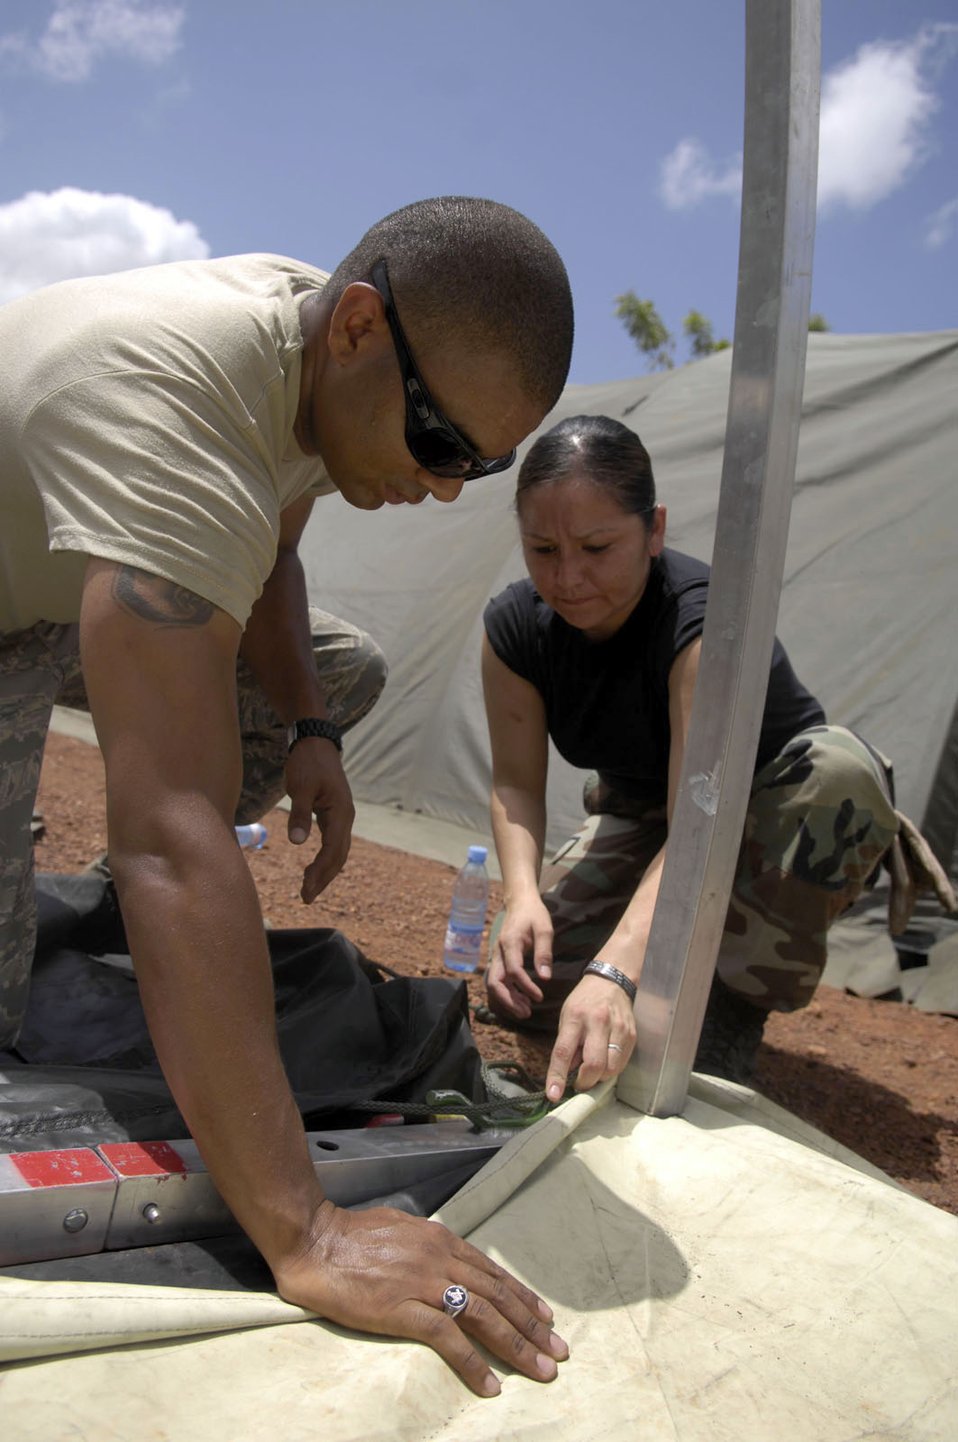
Preparing for MEDFLAG 08

Tech. Sgt. Calvin Oliver and Staff Sgt. Idelia Beletso set up an expeditionary medical support tent for MEDFLAG 08, July 13. More than 90 servicemembers deployed to Bamako, Mali, July 11 for MEDFLAG 08, a multinational medical training exercise designed to enhance medical capabilities and readiness for U.S. and African Forces. Sergeants Oliver and Beletso are assigned to the 31st Medical Group, Aviano Air Base, Italy.